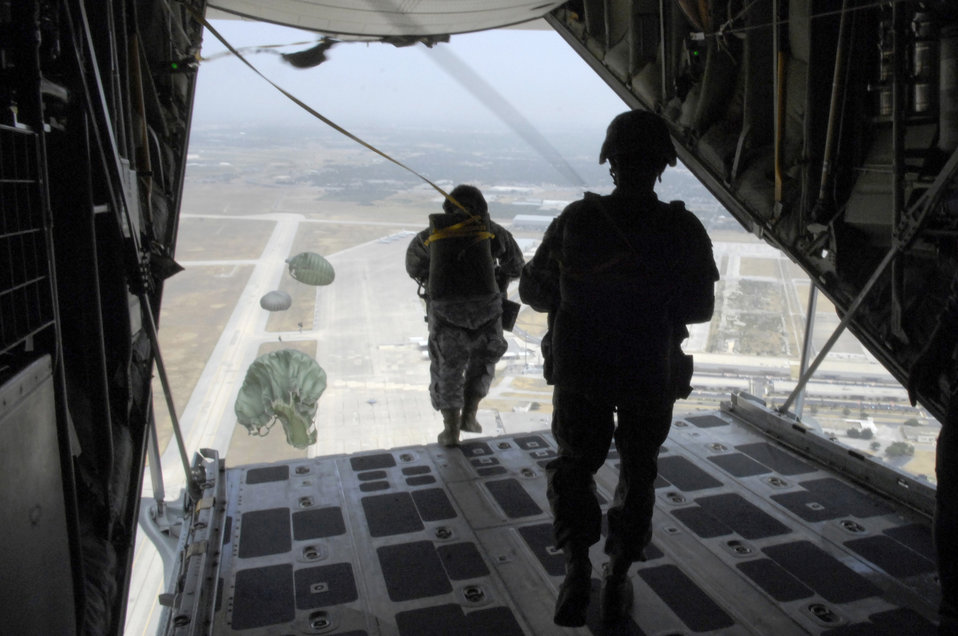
Jump training at Lackland AFB

Over Lackland Air Force Base, Texas, Airmen from the 342nd Training Squadron at Lackland conduct joint competency airborne training July 23 from a Marine C-130 Hercules.